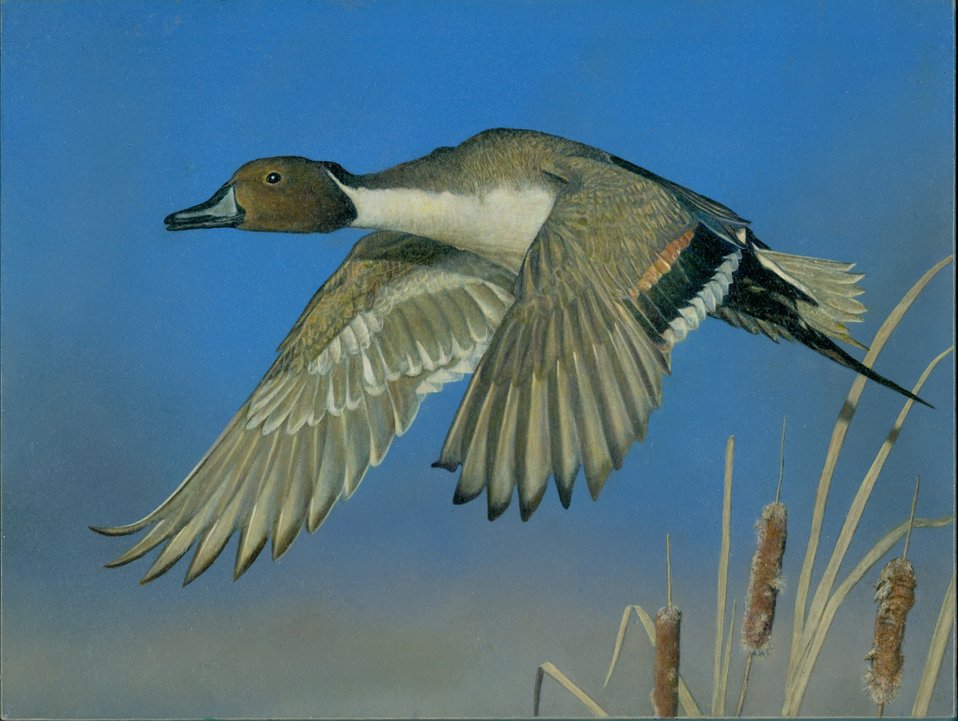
Ohio

2012 Jr Duck Stamp Program
State Best of Show
Ohio